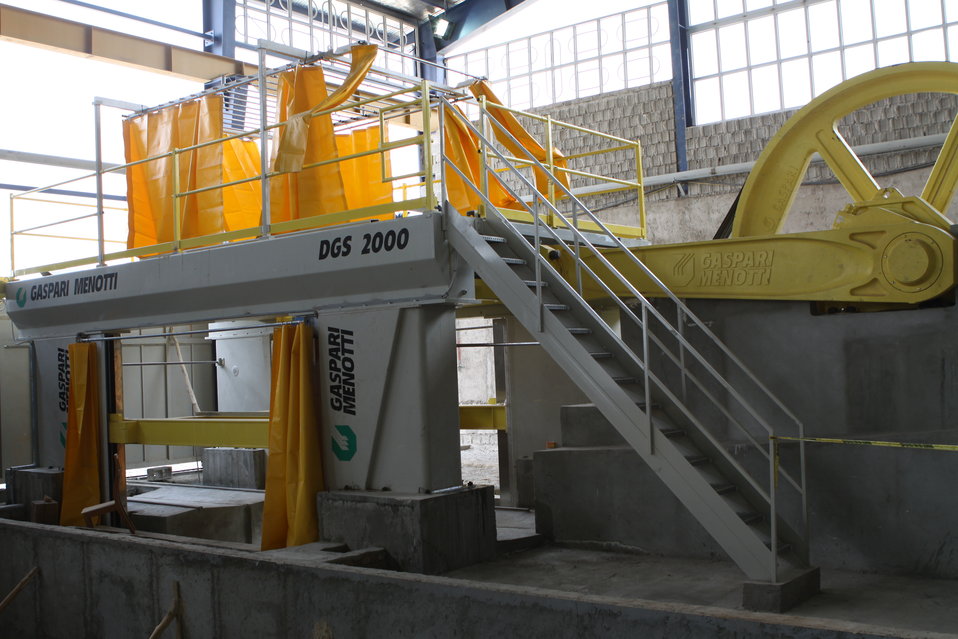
100525 Hirat Marble Conference 297